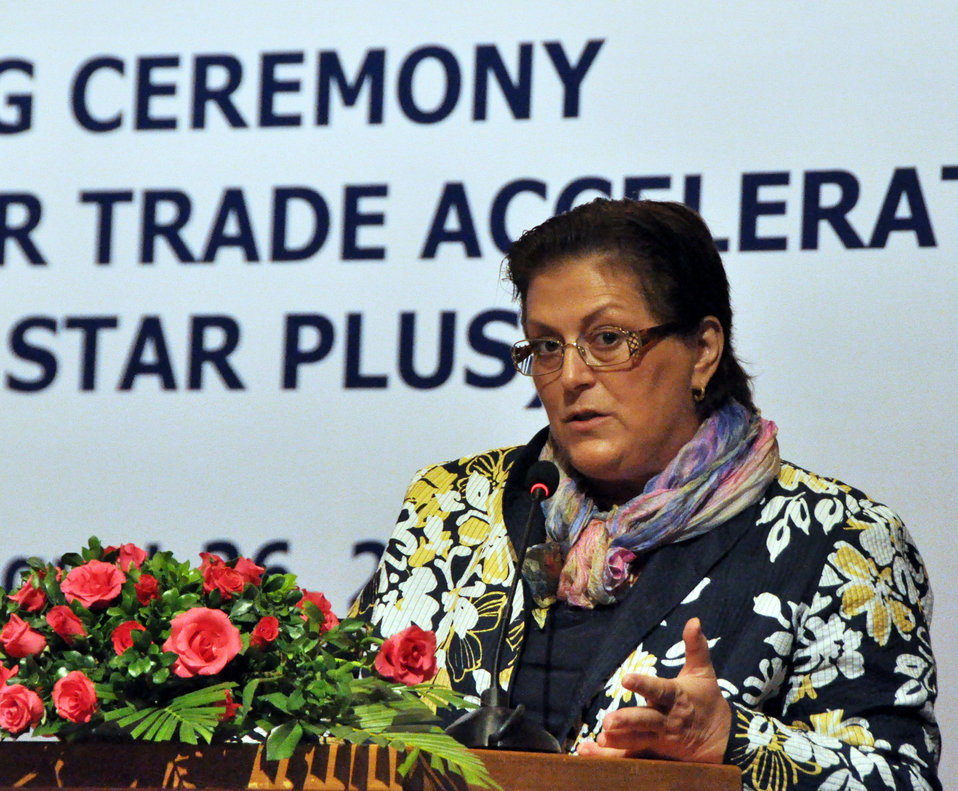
U.S. Embassy Charge d'Affaires Claire Pierangelo speaks at the USAID Support for Trade Acceleration Project (USAID STAR Plus) Closing Ceremony

Hanoi, August 26, 2013.